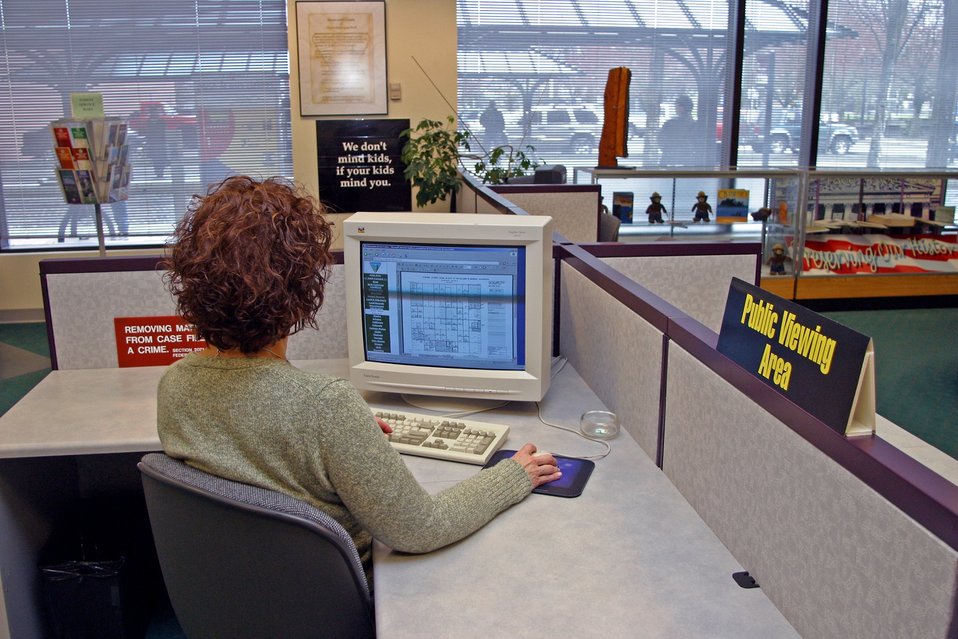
BLM's Land Office provides information about land status, minerals, maps, and general information to the public.